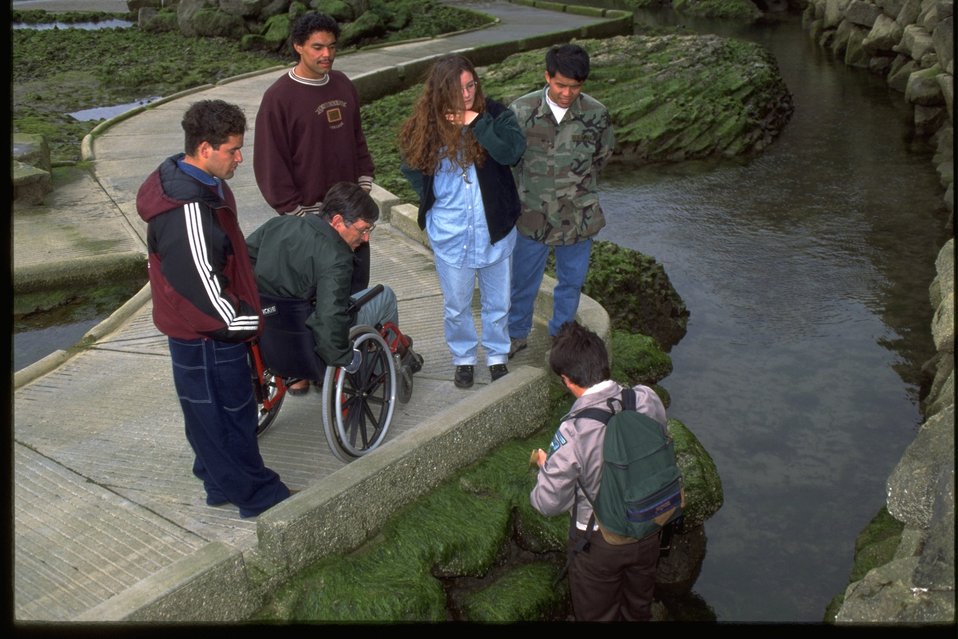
Programs at Yaquina Head Outstanding National Area accessible tidepools.